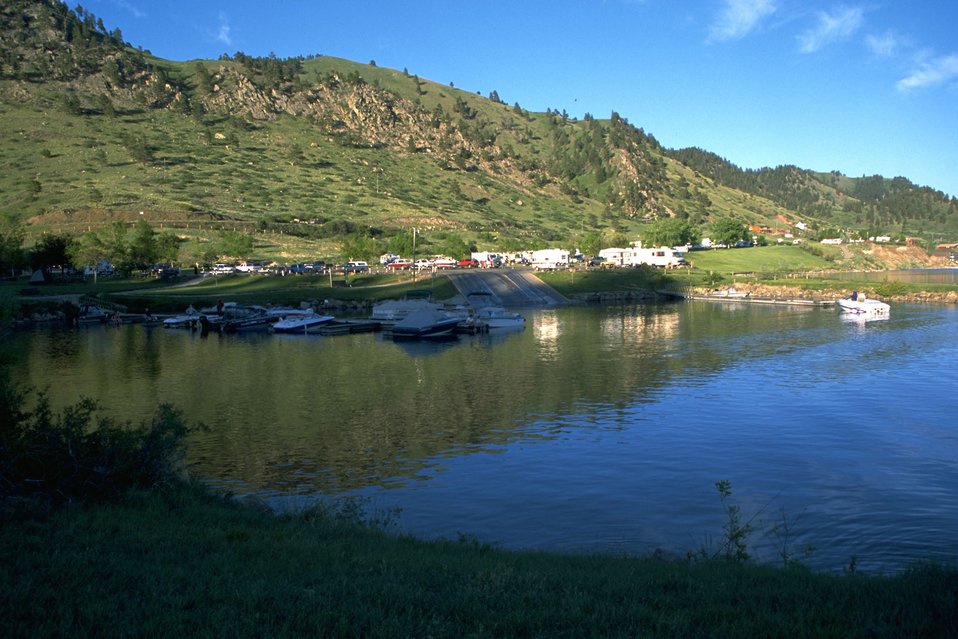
Holter Lake Campground and Marina in the late afternoon light